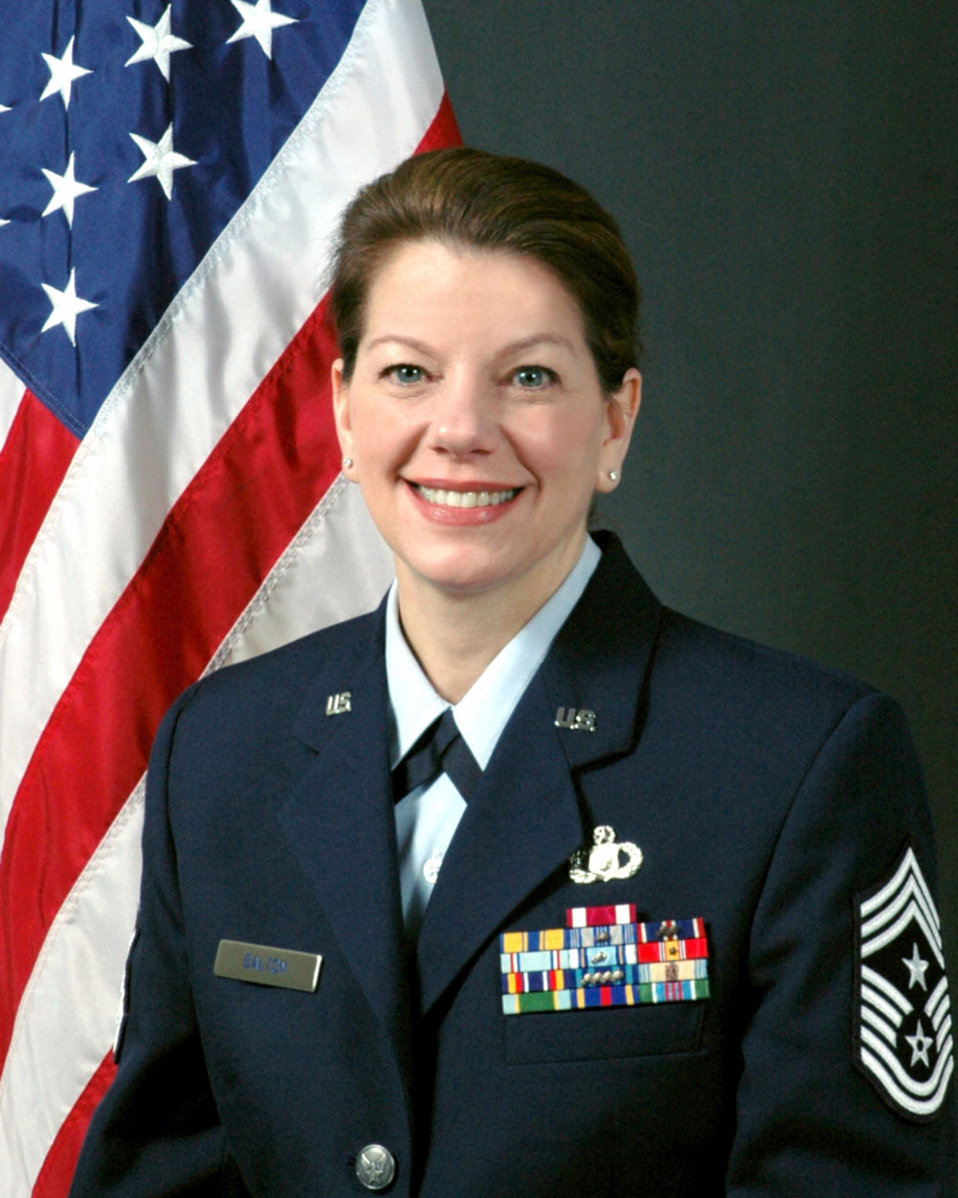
Jan Dalton served four years of active duty in the U.S. Air Force and 29 years in the Air Force Reserve. She retired after 33 years of service as the Command Chief Master Sergeant, the highest ranking enlisted member of the 934th Airlift Wing, Minneapolis-St. Paul International Airport Air Reserve Station. Dalton was hired into the Safety Specialist position in R3 in August 2012. Her role in the Fish and Wildlife Service is not unlike that of her military experience: “Just as it was an honor to protect the Airmen that worked so hard to protect our freedom, it is now an honor to help protect those who work so hard to protect our environment and natural habitats.”